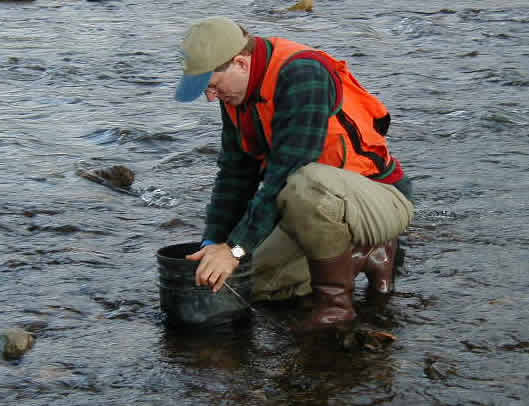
USFWS biologist collecting stream substrate data

USFWS biologist Will Smith colelcting stream substrate data